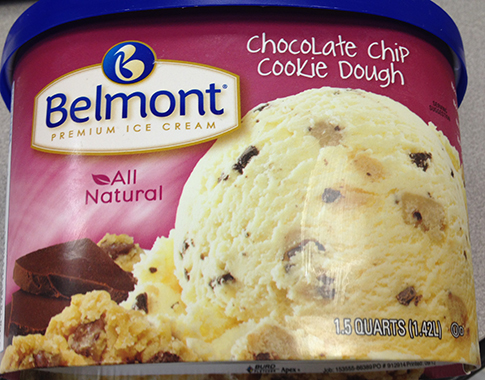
RECALLED – Belmont Chocolate Chip Cookie Dough Ice Cream

March 5, 2014 – Product Recall – House of Flavors Issues Voluntary Recall Due to Possible Undeclared Nut Allergen in Belmont Chocolate Chip Cookie Dough Ice Cream.